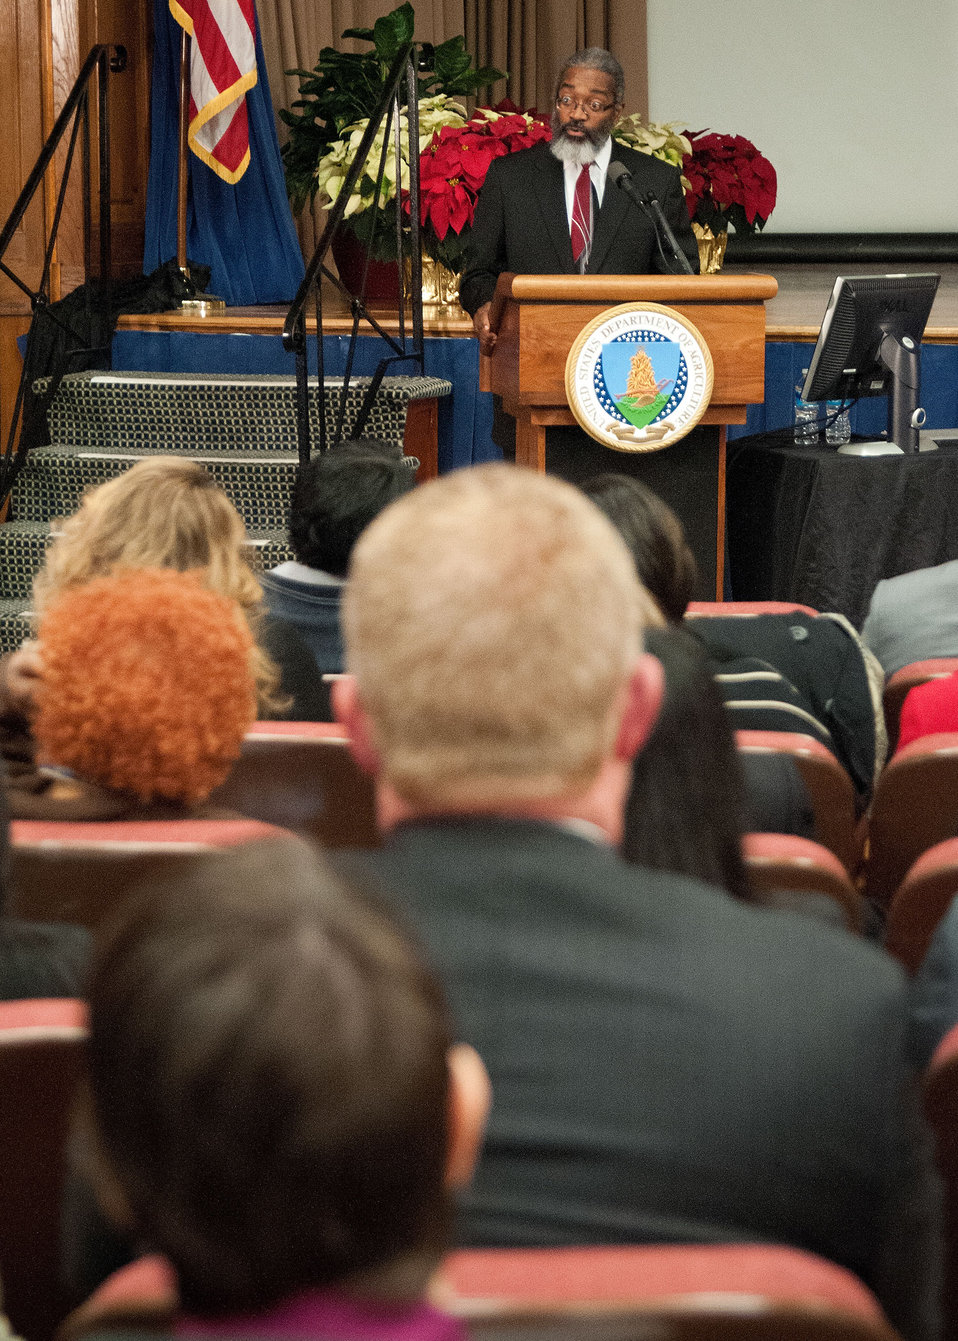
Agriculture Acting Assistant Secretary for Administration Dr. Gregory Parham offers closing remarks at the U.S. Department of Agriculture’s (USDA) Fourth Annual Cultural Transformation event held in Washington, D.C. on Tuesday, Dec. 4, 2012. The theme for the event “Faces of Cultural Transformation” Focusing on changing the way we serve our customers and cultural transformation’s benefits to employees.